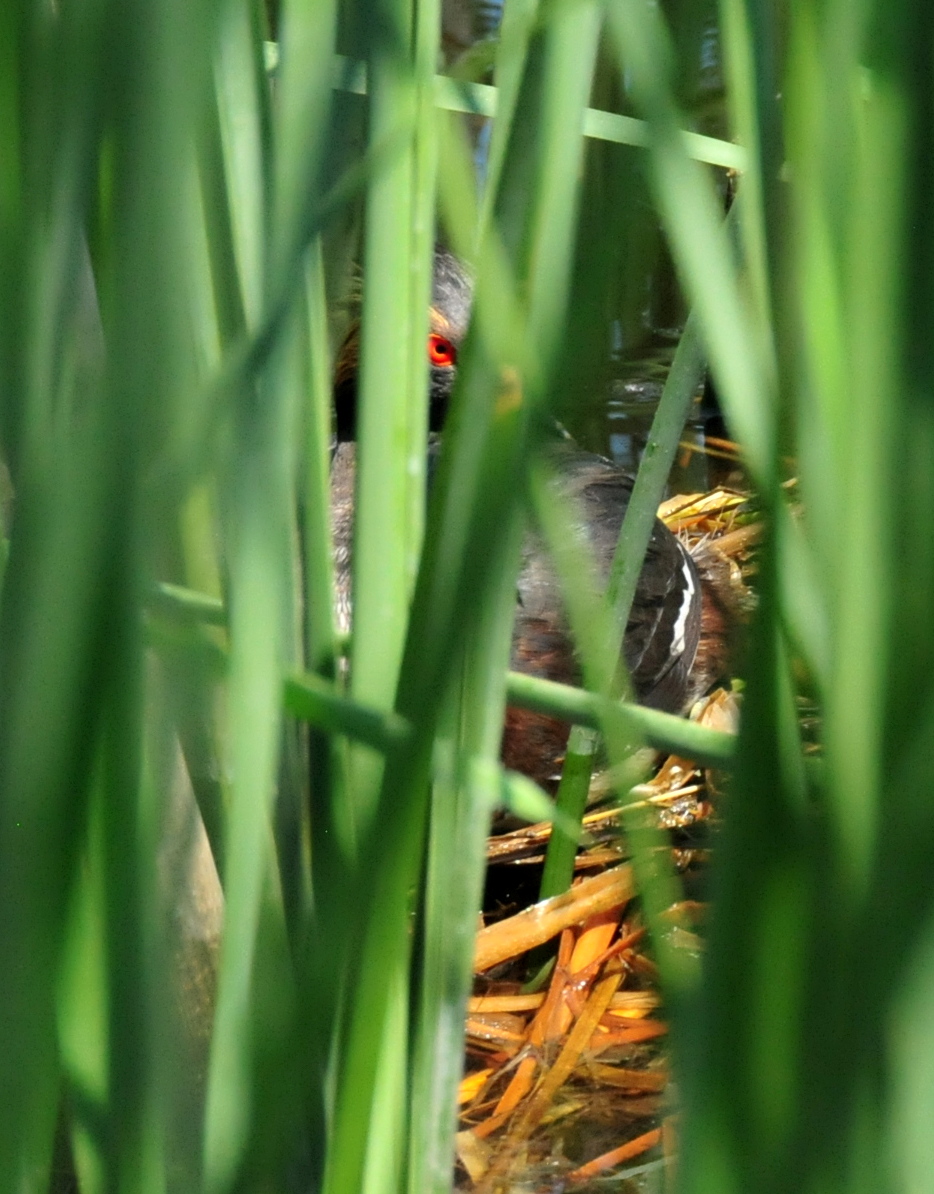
Eared grebe on nest Sand Lake Wetland Management District 01

An eared grebe incubating eggs on a floating nest on Sand Lake Wetland Management District. Eared Grebes nest in dense colonies. Both parents help build the well-concealed nest, which is a floating platform of weeds anchored to emergent vegetation in shallow water. Both male and female birds incubate the three to four eggs for about 21 days. As soon as all the young have hatched, the family leaves the nest. Both adults feed and tend the young, sometimes splitting the workload about 10 days post-hatching, with each parent taking half of the brood. The young are generally independent after 21 days. They winter in large concentrations on Great Salt Lake and Mono Lake.